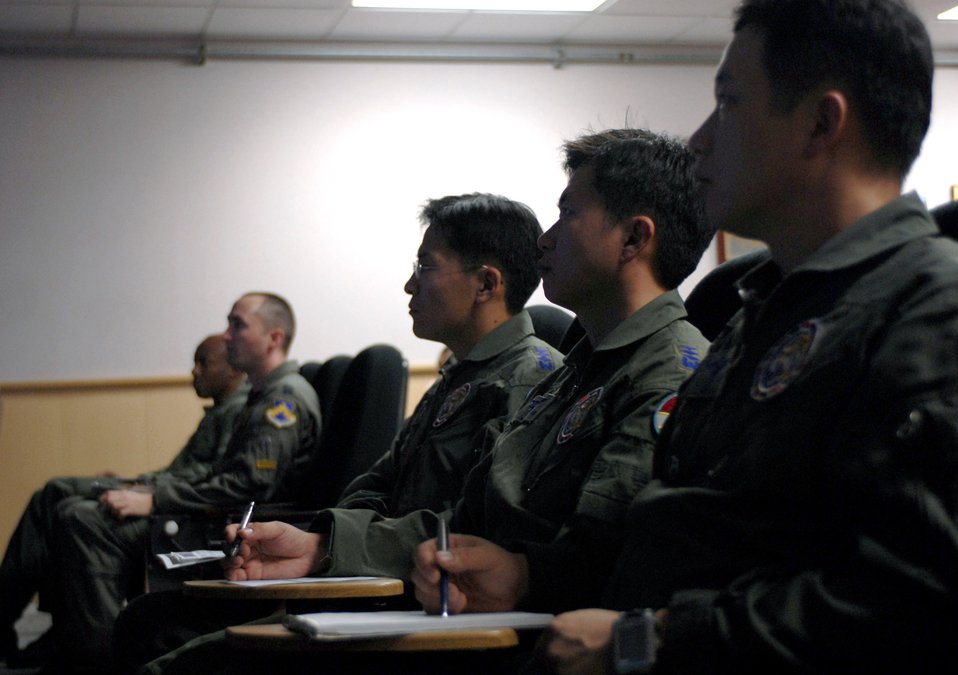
8th FW commander, ROKAF fly in training mission

Pilots from the Republic of Korea Air Force, 111th Fighter Squadron along with pilots from the 8th Fighter Wing received a mission brief here Nov. 14. ROKAF pilots and Wolf Pack pilots trained together on a joint mission to give pilots from both countries a chance to work together and hone their warfighting skills.